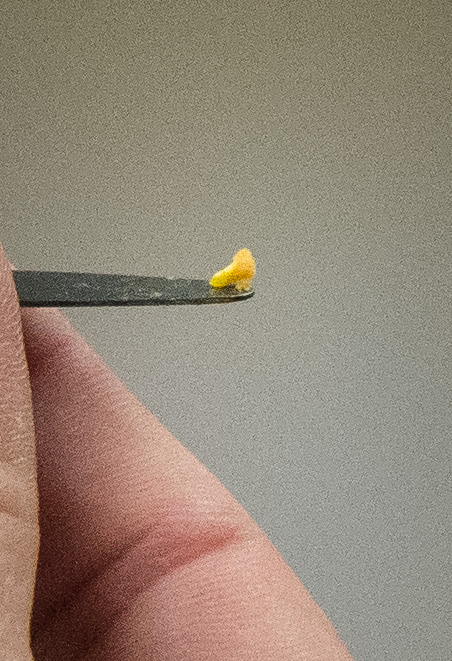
Scientists extract seed embryos from acorns as part of the research being conducted at the U.S. Department of Agriculture (USDA), Agriculture Research Service (ARS), National Center for Genetic Resources Preservation (NCGRP), Plant Germplasm Preservation Research Unit (PGPRU), in Ft. Collins, CO, on Wednesday, Nov. 6, 2013.